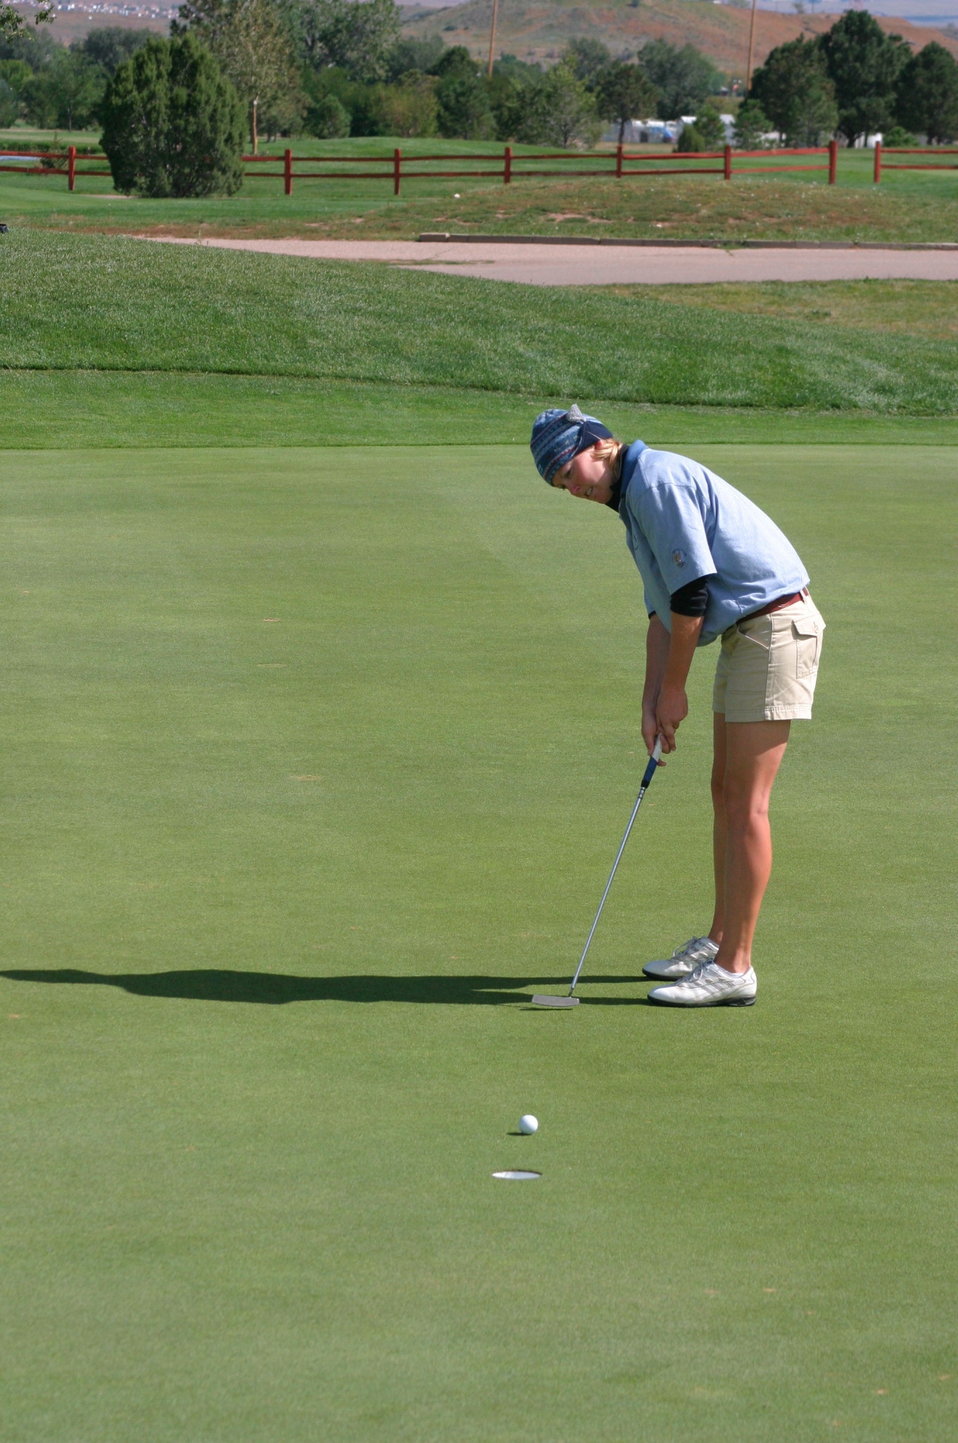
Air Force wins 2004 Armed Forces Golf Championship

FORT CARSON, Colo -- Karin Tjelmeland putts during the 2004 Armed Forces Golf Championship here. The Air Force golf team won the four-day match. Tjelmeland was the top female golfer with her total of 341. She is from Lajes Field, Azores.